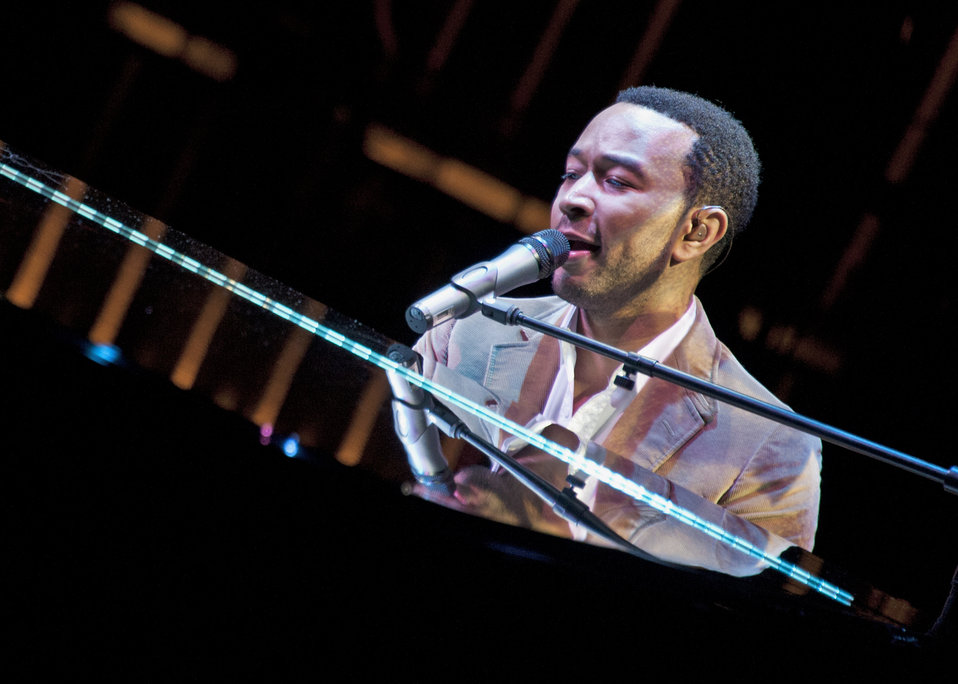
John Legend entertains troops in Florida

Six-time Grammy winning R & B singer John Legend entertained a crowd of more than 1,000 Nov. 14, 2010, in Niceville, Fla. The show was part of the Air Force Reserve's